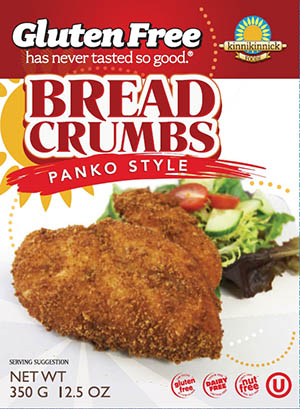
RECALLED – Waffles, Mix, Bread Crumbs

January 8, 2014 – Product Recall – Allergy Alert - Undeclared Milk in Five Kinnikinnick Foods Products.